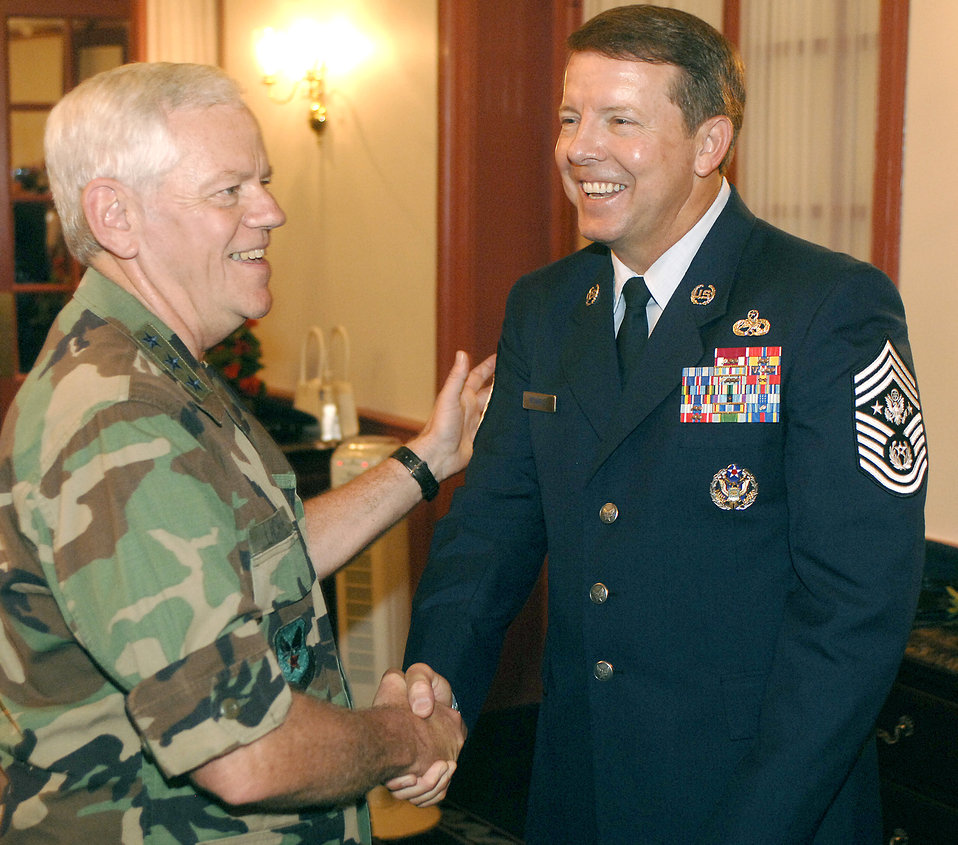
New CMSAF

Chief Master Sergeant of the Air Force Rodney J. McKinley is congratulated by Assistant Vice Chief of Staff of the Air Force Lt. Gen. Arthur Lichte following the ceremony during which Chief McKinley became the 15th chief master sergeant of the Air Force.